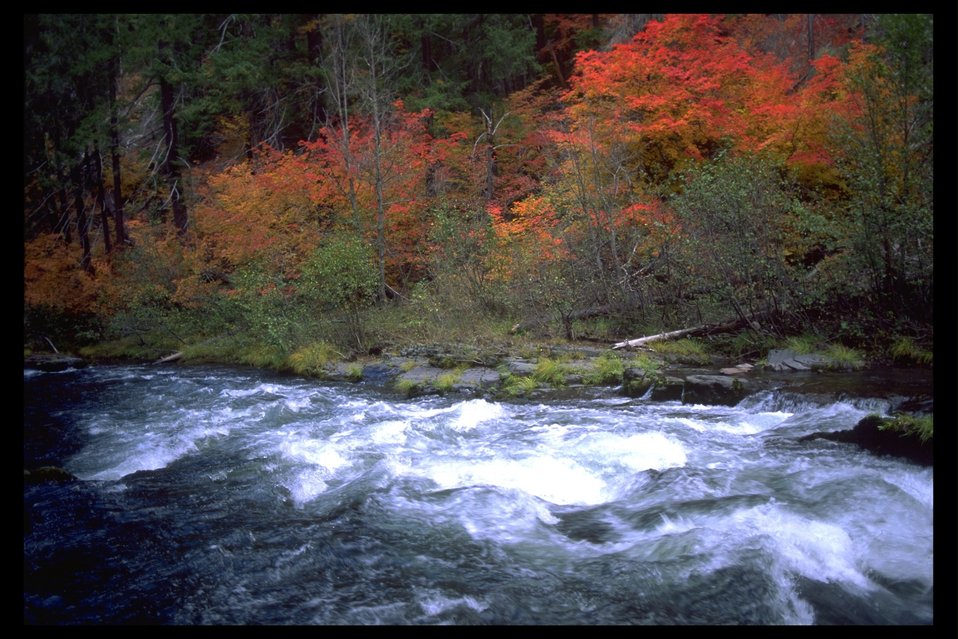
Fall colors on the Rogue River near Union Creek.